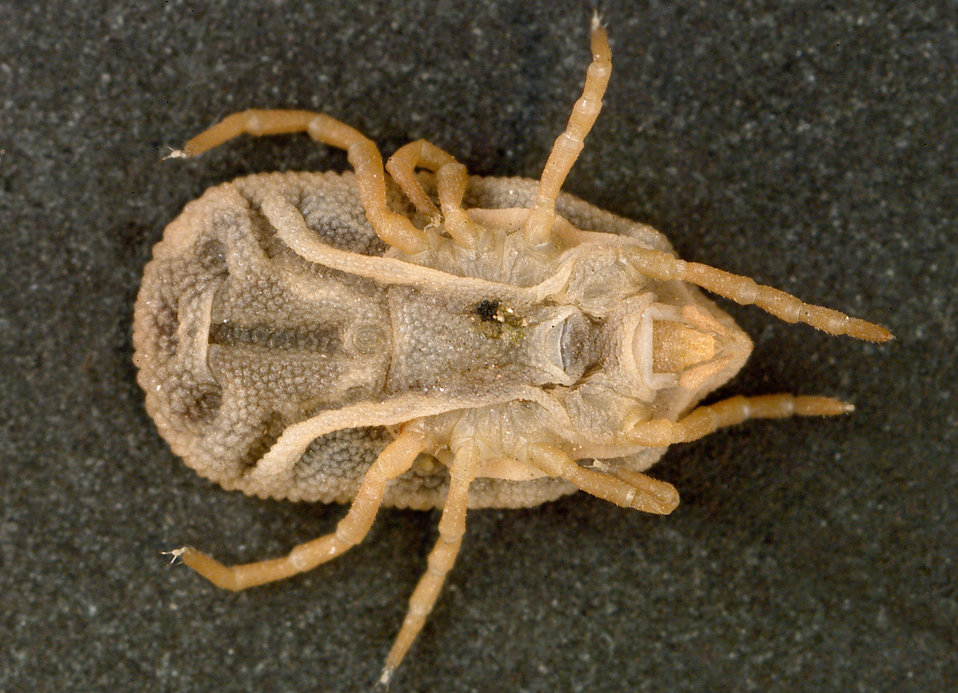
This is a ventral view of the 'soft tick' Carios kelleyi, formerly Ornithodoros kelleyi, or the 'Bat Tick'.